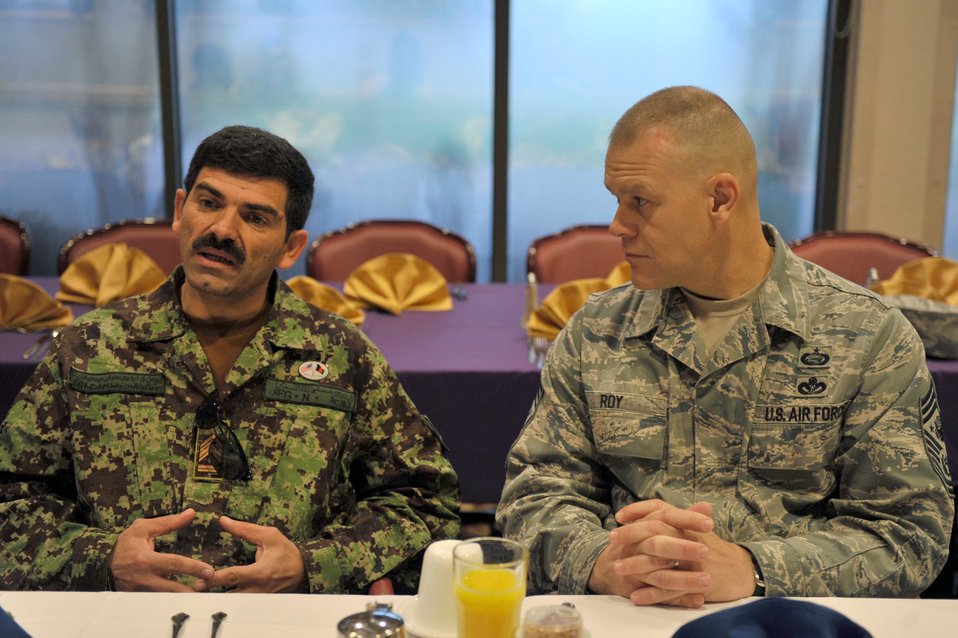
Chief Roy

Chief Master Sgt. of the Air Force James A. Roy speaks with Eid Mohammad, the command sergeant major of the Afghan air force, Oct. 27, 2010, at Lackland Air Force Base, Texas.